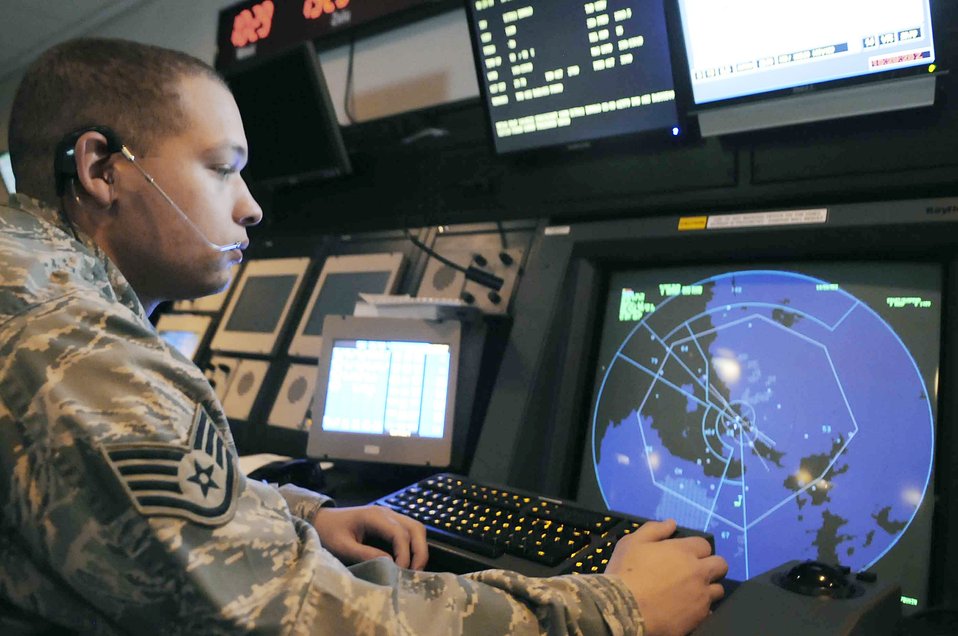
Digital improvement for air traffic

Staff Sgt. Jacob Martin views a radar scope with the new Digital Airport Surveillance Radar signals at Ellsworth Air Force Base, S.D., Oct. 14, 2009. The newer technology used in the digital equipment reduces the maintenance team's workload on a daily basis. Sergeant Martin is a 28th Operations Support Squadron air traffic controller.